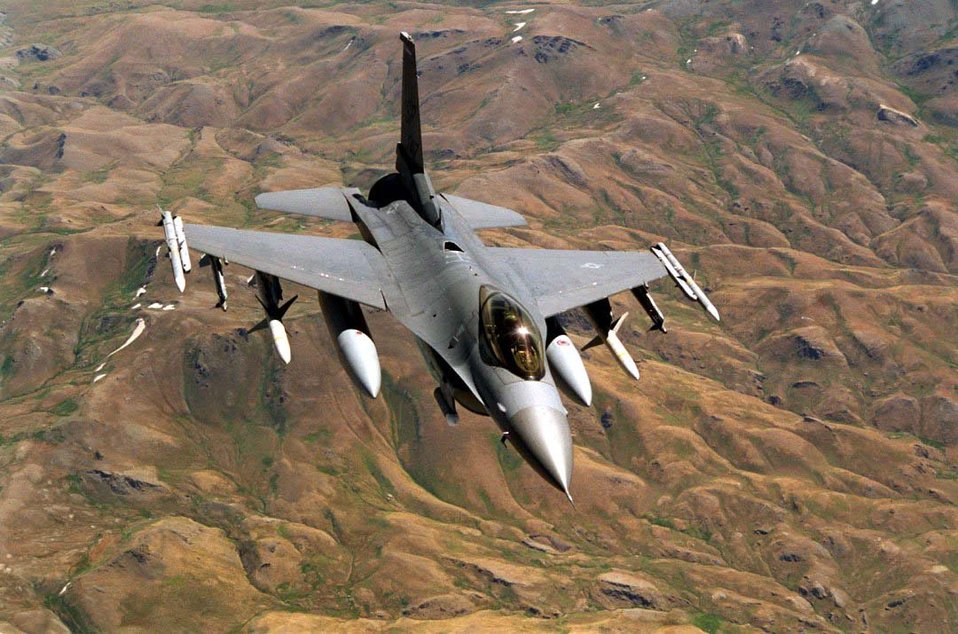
The F-16 Fighting Falcon

FILE PHOTO -- The F-16 Fighting Falcon is a compact, multirole fighter aircraft. It is highly maneuverable and has proven itself in air-to-air combat and air-to-surface attack. It provides a relatively low-cost, high-performance weapon system for the United States and allied nations.